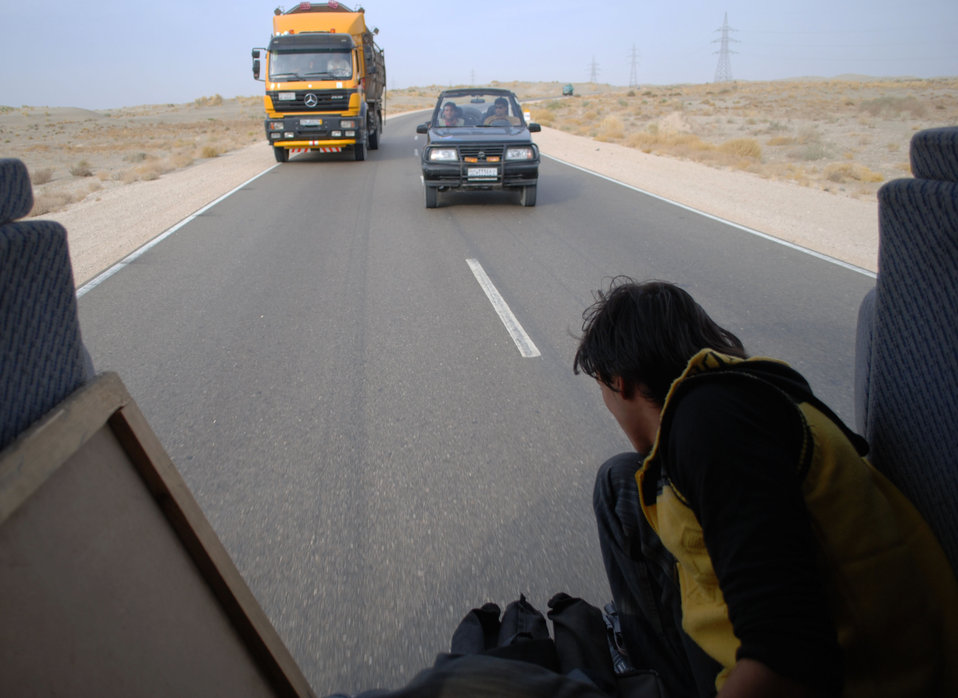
'On the Road' in Balkh Province